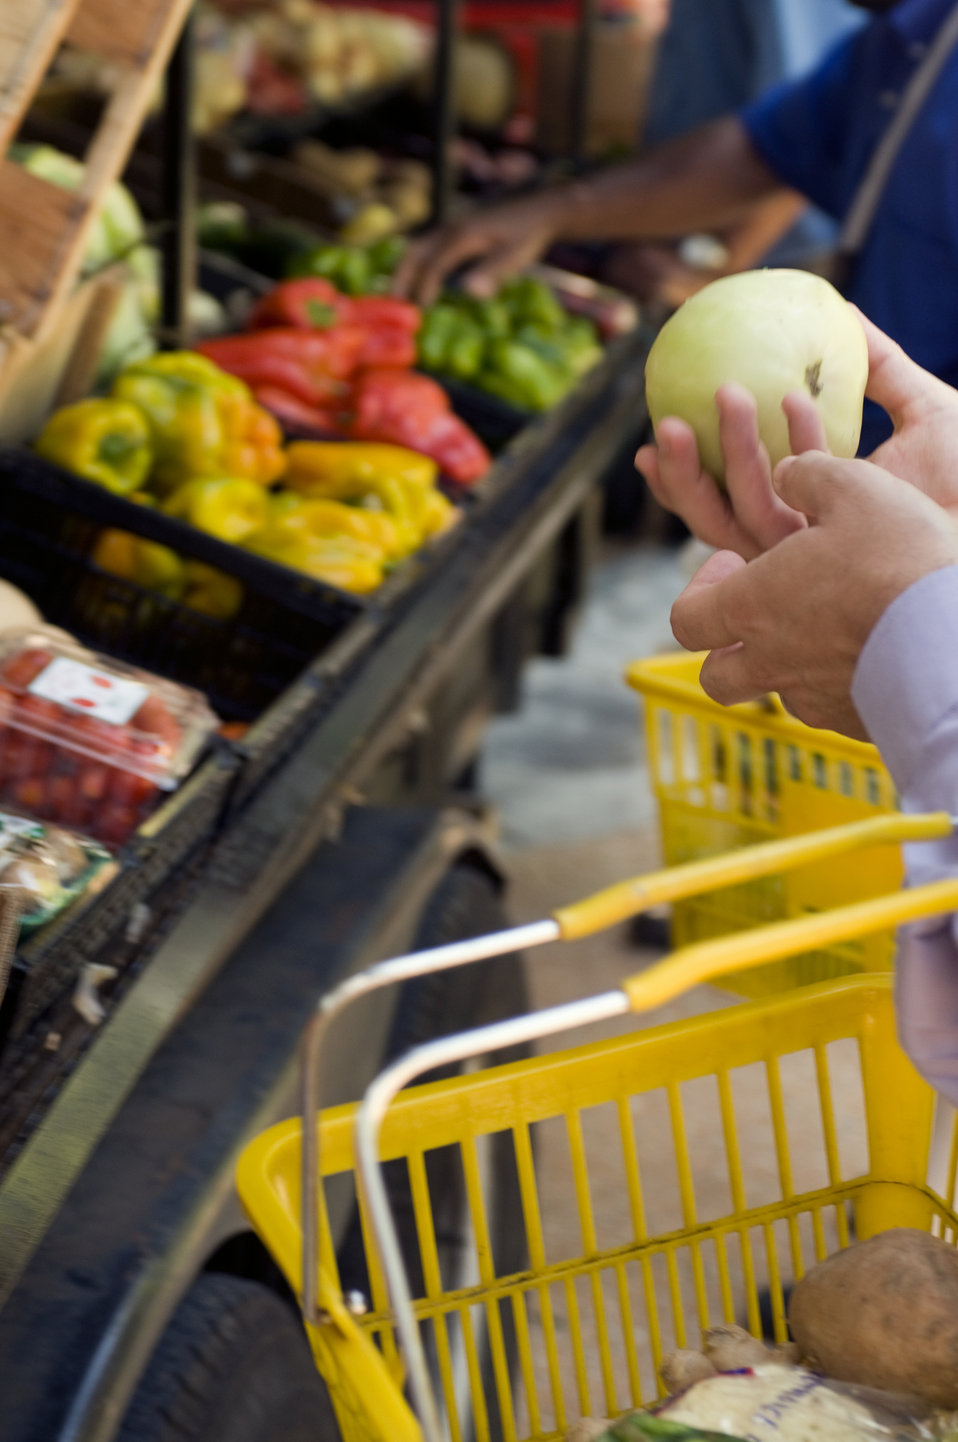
The hands of this produce shopper were holding up a green tomato, as it was inspected by a potential mobile produce market buyer. After having made their selections, these shoppers would then place them into a yellow plastic hand-held basket, as they made their way to checkout.